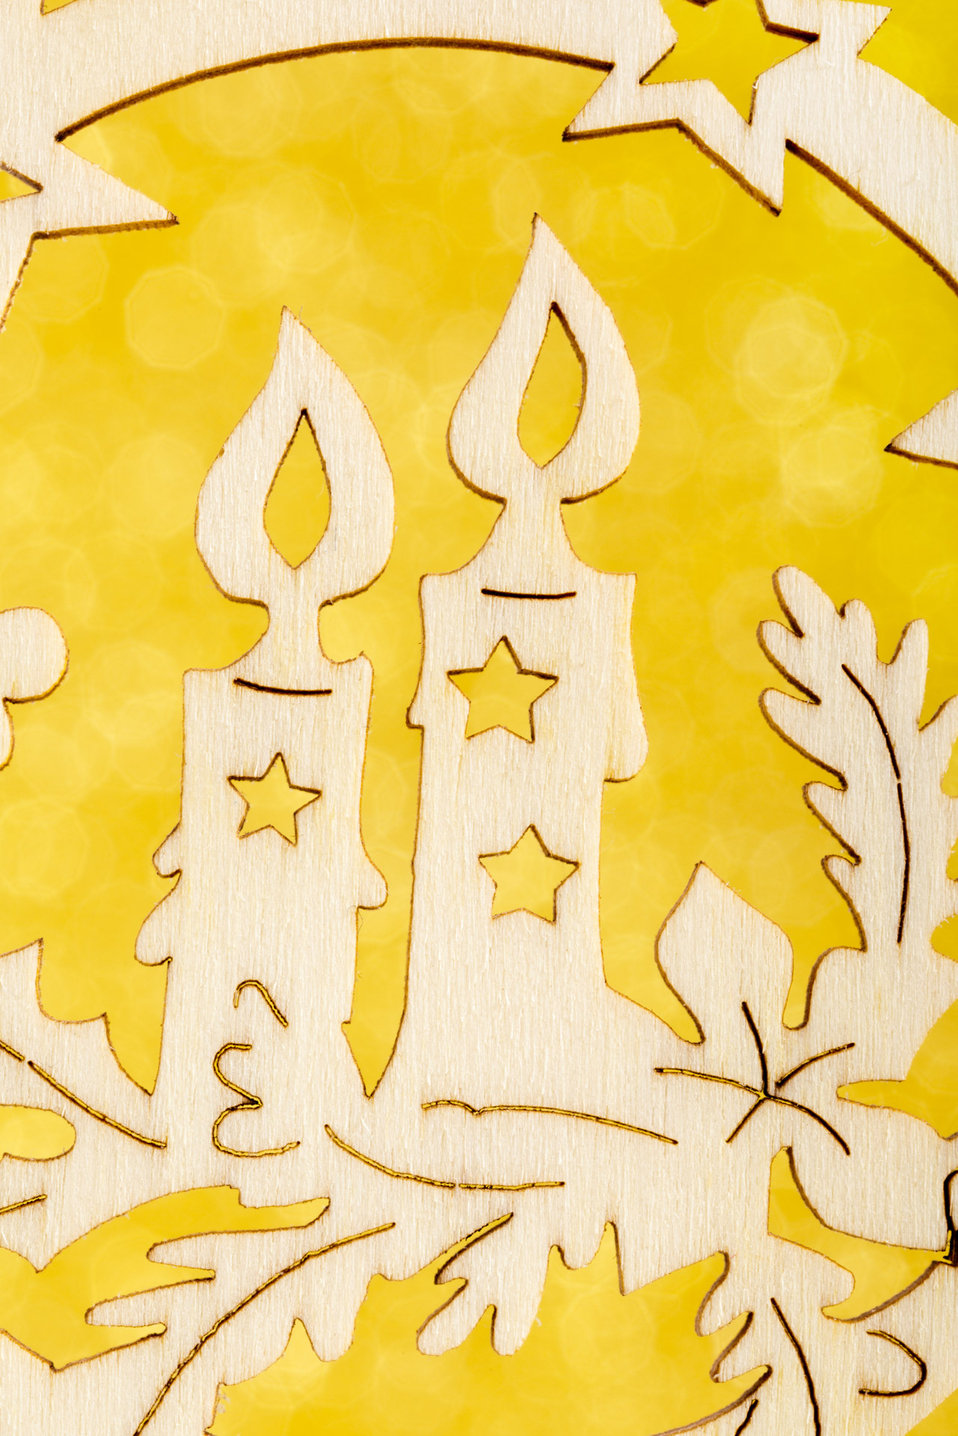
Wooden christmas ornaments on blurry golden background.